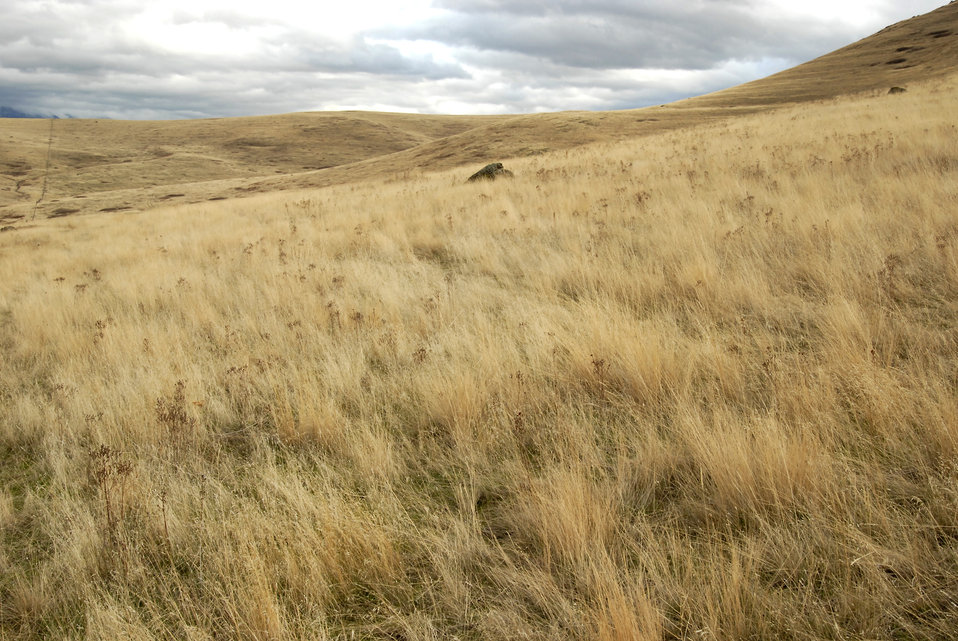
Native grasses wave in the wind on the National Bison Range Wildlife Refuge in Montana on November 17, 2007. The U.S. Fish and Wildlife Service administers this refuge as part of the National Wildlife Refuge System. The refuge was established in 1908 and is one of the oldest Wildlife Refuges in the nation and was established to support a population of American bison. There are approximately 350-500 American bison. Other large wildlife found on the Range includes elk, whitetail and mule deer, pronghorn antelope, bighorn sheep and black bear.